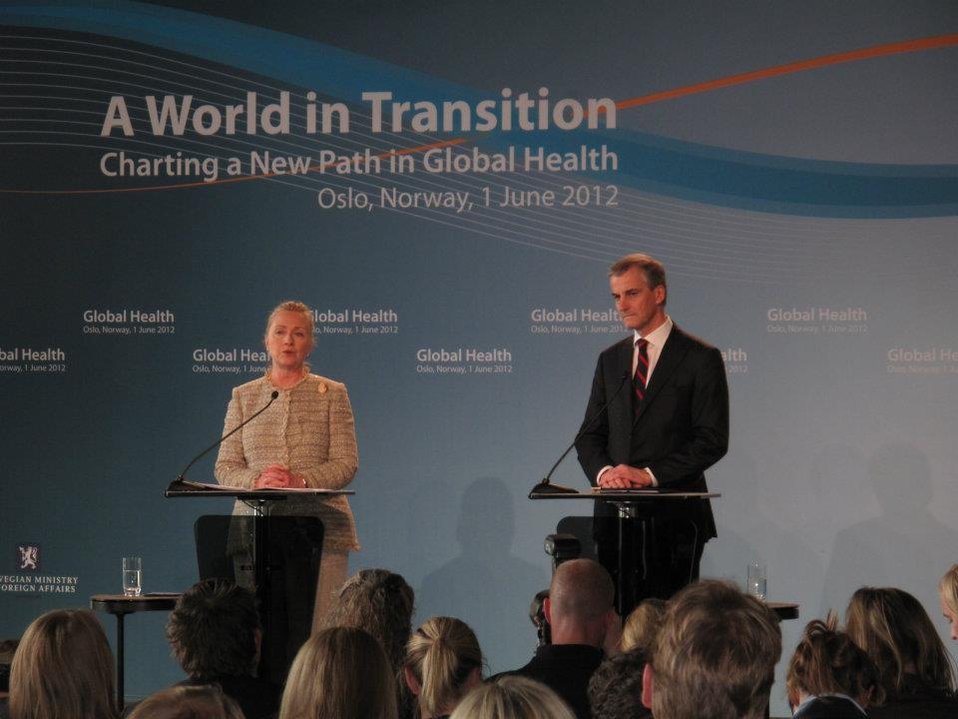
Secretary Clinton and Norwegian Foreign Minister Store Address Reporters

U.S. Secretary of State Hillary Rodham Clinton and Norwegian Foreign Minister Jonas Gahr Store address the press after the international conference “A World in Transition: Charting a New Path in Global Health,” organized by the Norwegian government in Oslo on June 1, 2012.